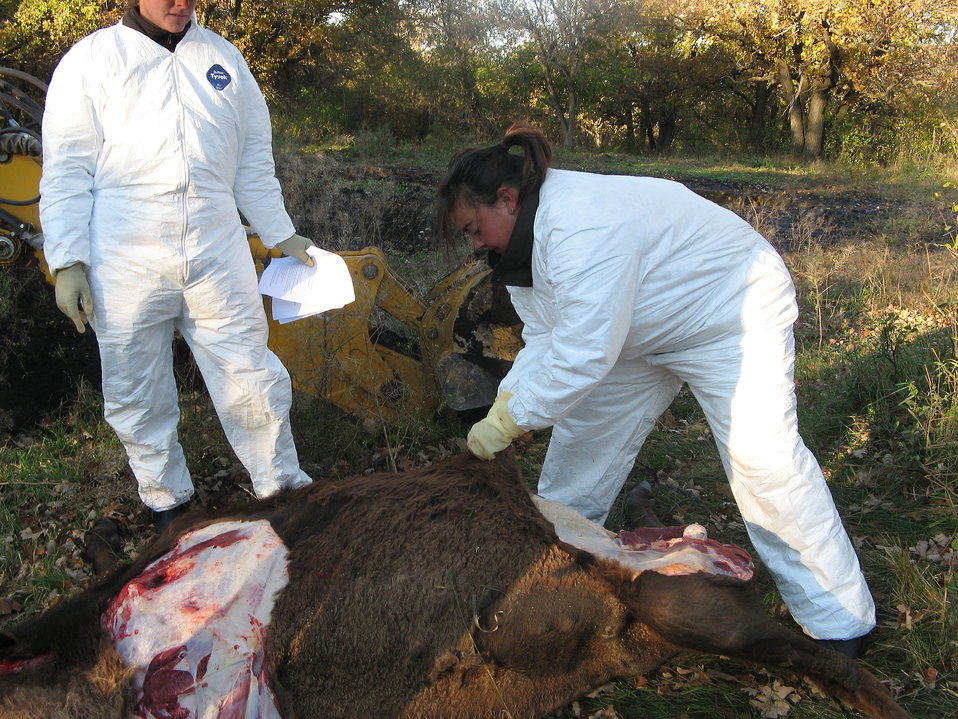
Bison Necropsy

Diane Borgreen and Lee Jones perform a necropsy (an autoposy performed on an animal) on a bison at Sully's Hill National Game Preserve. Necropsy of animals that die is important in learning what disease or health issues may be affecting refuge wildlife populations.